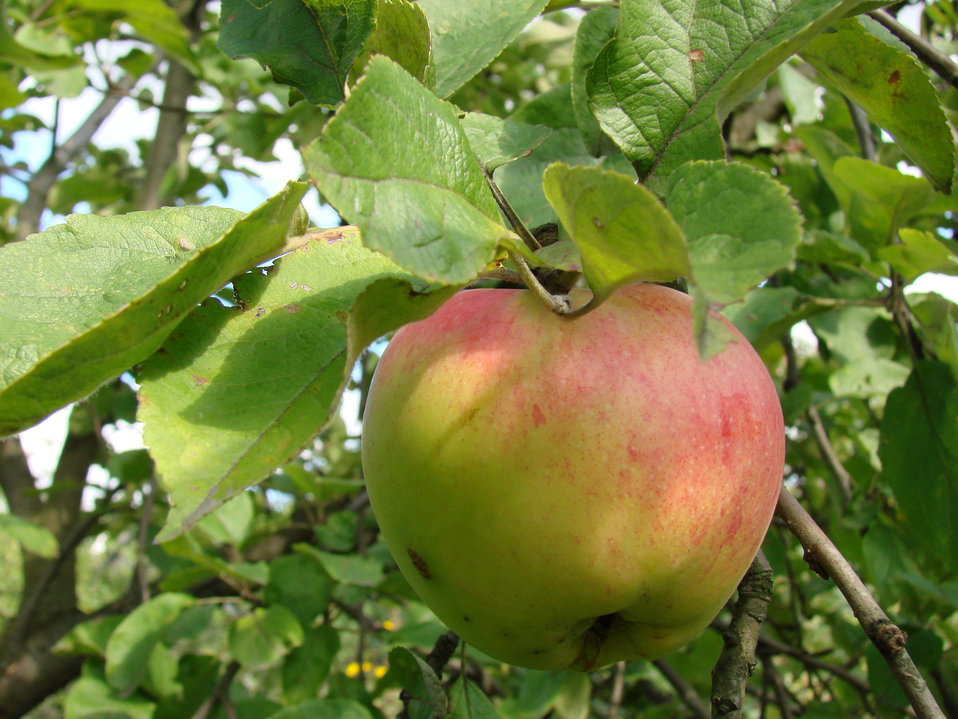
Яблоко на яблоне - Apple